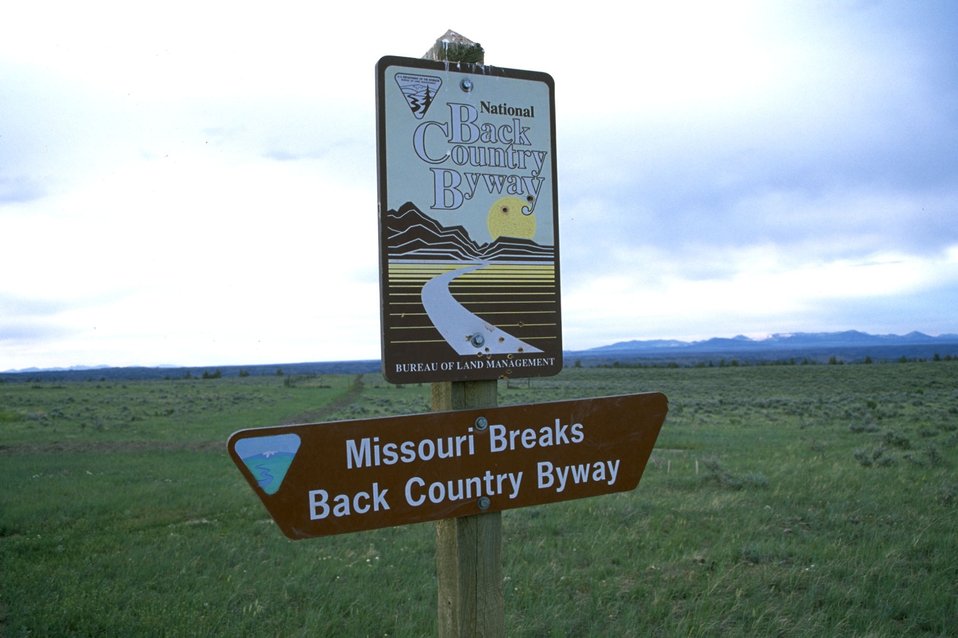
Missouri Breaks Back County Byway signs